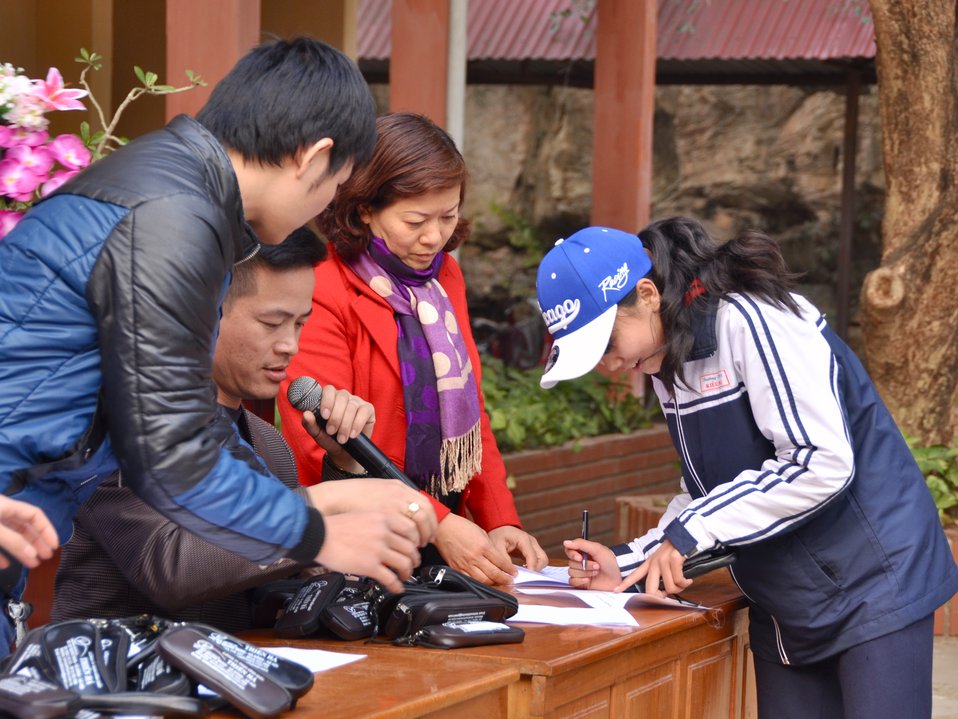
USAID supports distribution of eyeglasses to pupils and teachers in Quoc Oai, Hanoi.

Kieu Phu Junior Secondary School, Quoc Hoai, Hanoi, December 23, 2013.